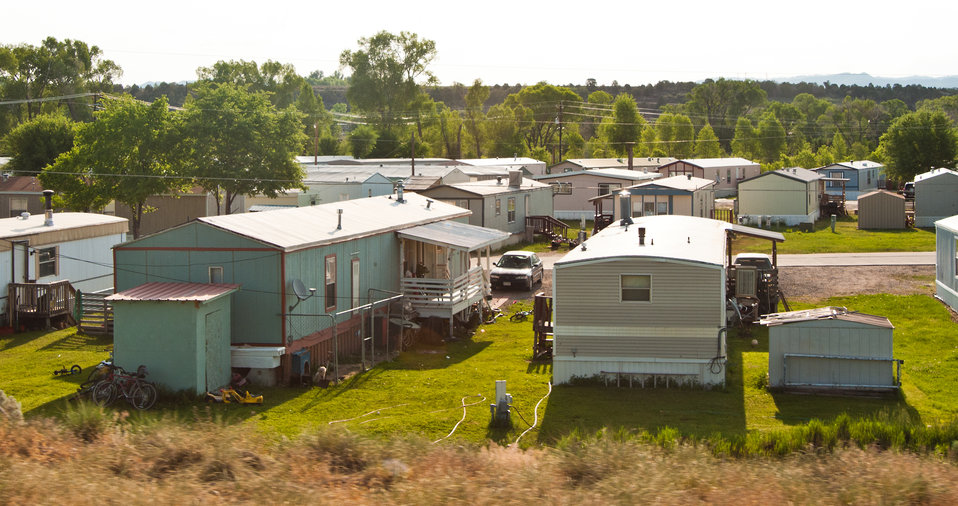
The U.S. Department of Agriculture (USDA) StrikeForce Initiative in cooperation with public and private organizations offers many economic grants, loans and conservation contracts through USDA's Rural Development (RD) and the Natural Resources of Conservation Service (NRCS) for areas of rural America with a high percentage of people living below the poverty level and considered economically distressed.